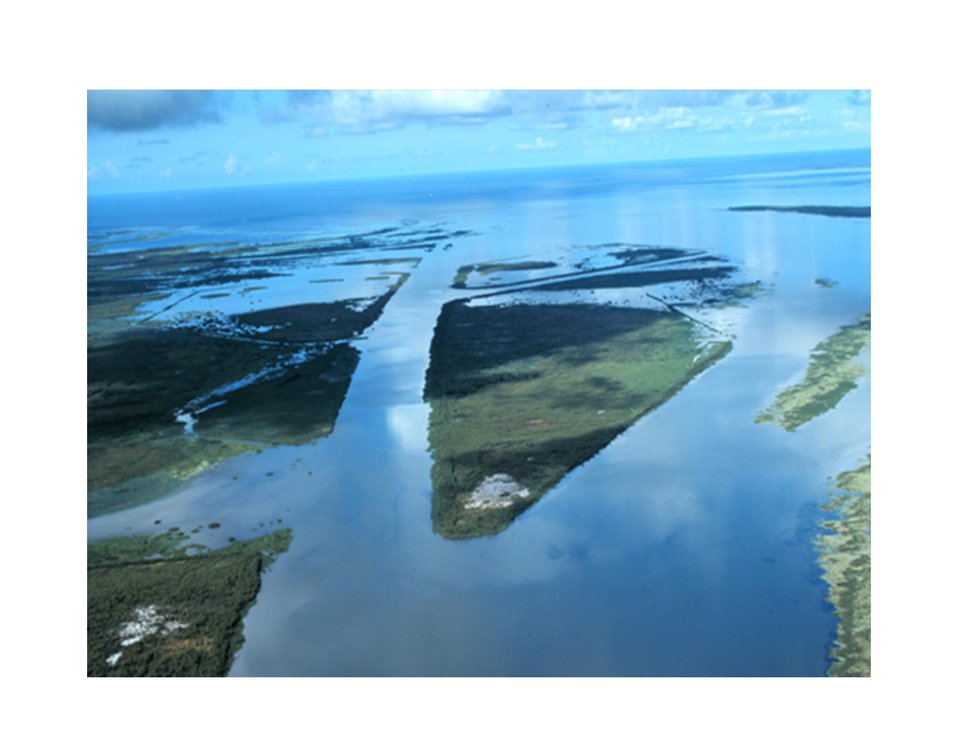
Louisiana Waterway